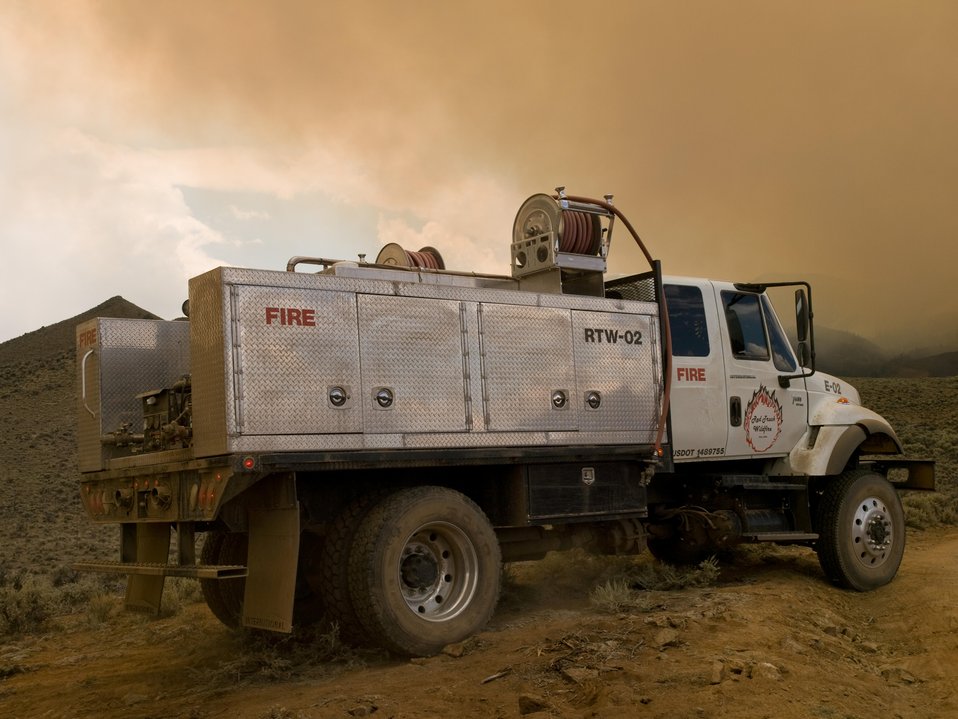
Type 4 fire engine at work on the Lodgepole Fire. The Lodgepole Fire in the Salmon-Challis National Forest near Challis, ID began on Jul. 20, 2013 by lightning has consumed approximately 13,700 acres and is approximately 15% contained.